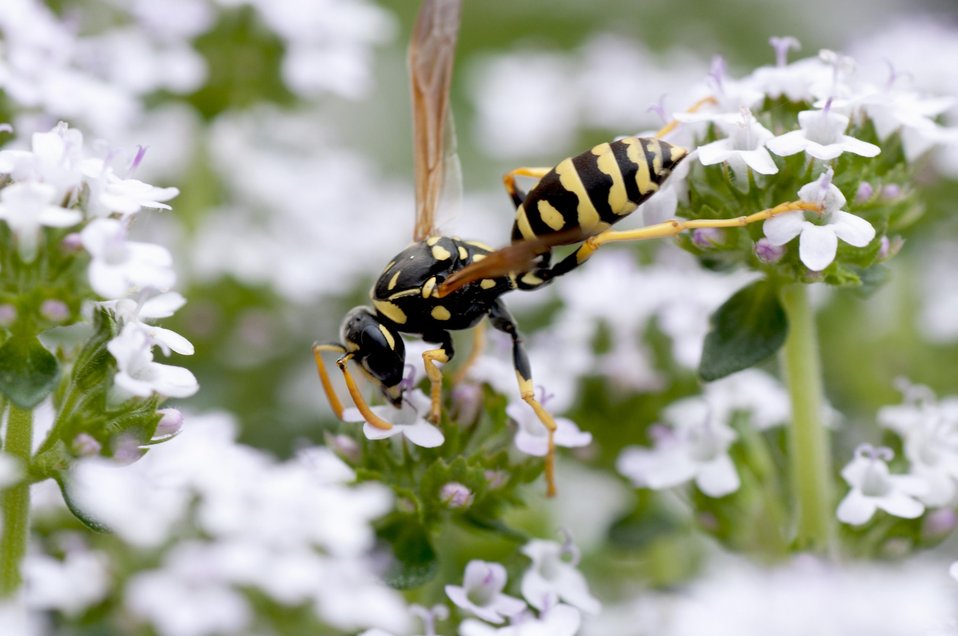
Hungry bee feeds on the sweet nectar of flowers of wild thyme.